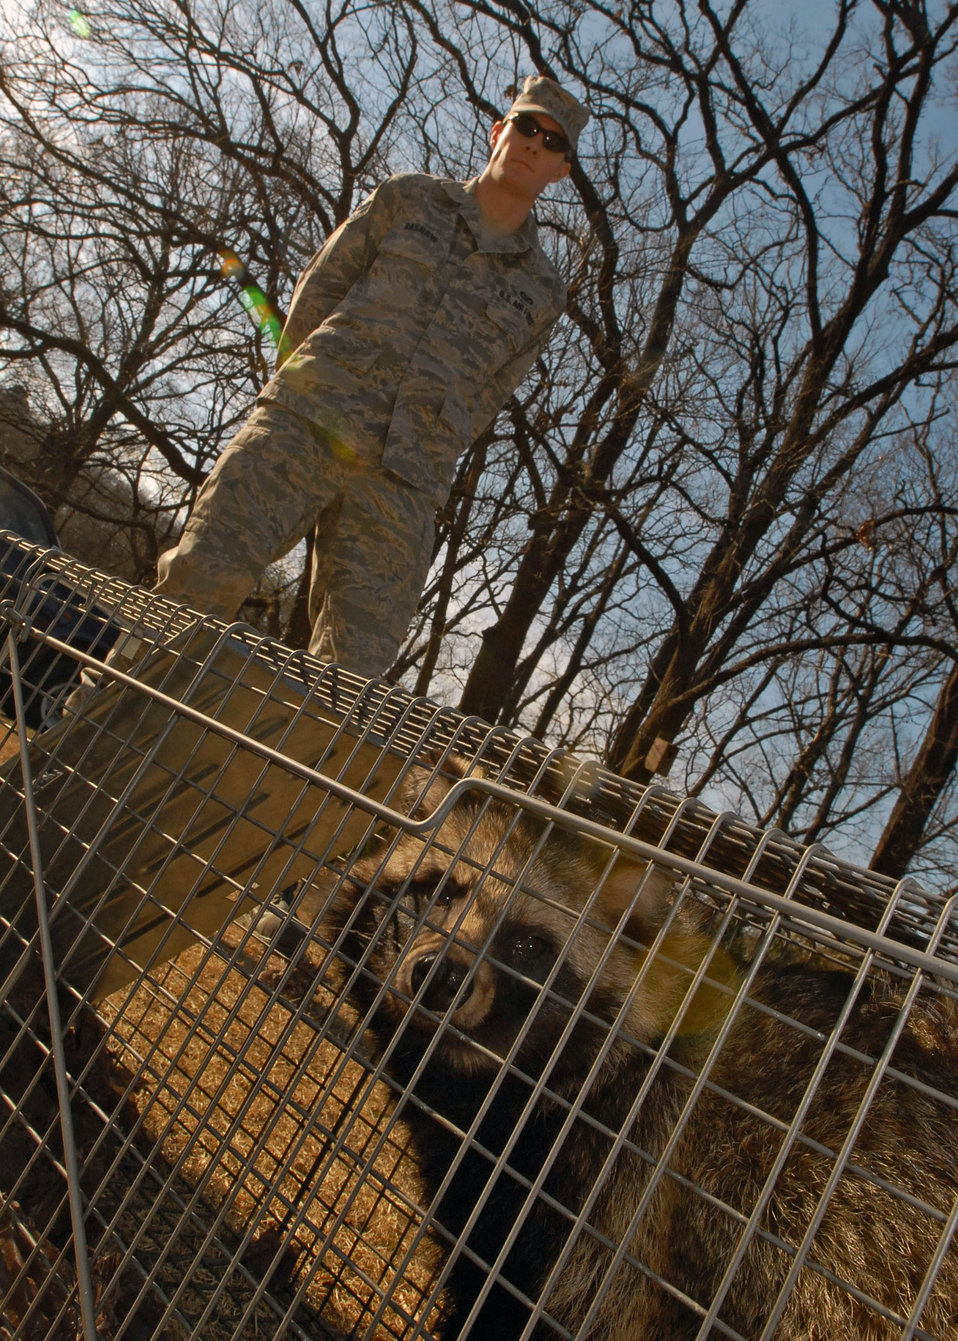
Yokota trespassers caught, detained, released

Senior Airman Mark Bashaw prepares to release a raccoon dog Jan. 8 in the forest at the Tama Hills Recreation Area on Yokota Air Base, Japan. The raccoon dog was captured Jan. 6. It's Airman Bashaw's job to remove wild animals from the base, keeping the airfield clear and the pet population safe. Airman Bashaw is assigned to the 374th Civil Engineer Squadron pest management office.